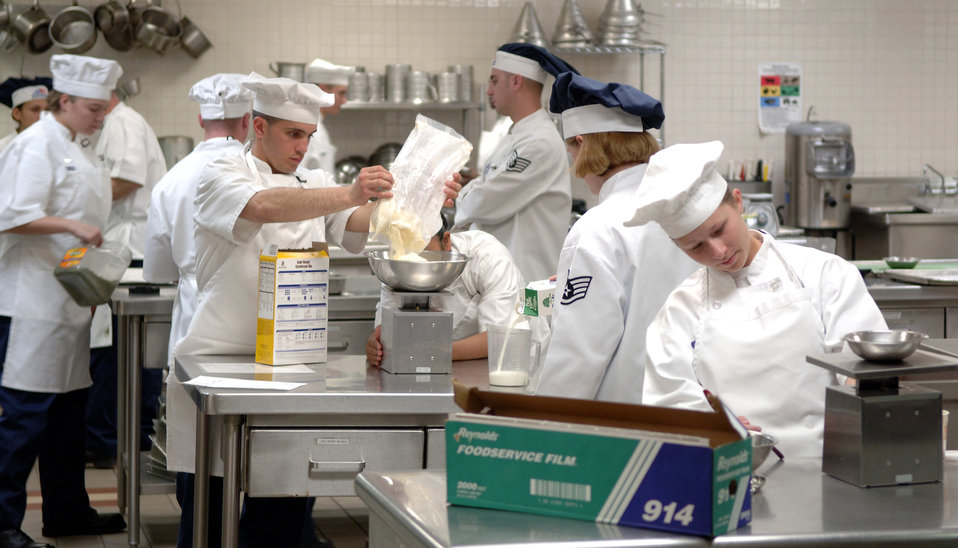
Feeding warriors

LACKLAND AIR FORCE BASE, Texas (AFPN) -- Airmen prepare dinner at the culinary arts training school during the services apprentice course here. The 31-day course consists of teaching all facets of the services technical trade.